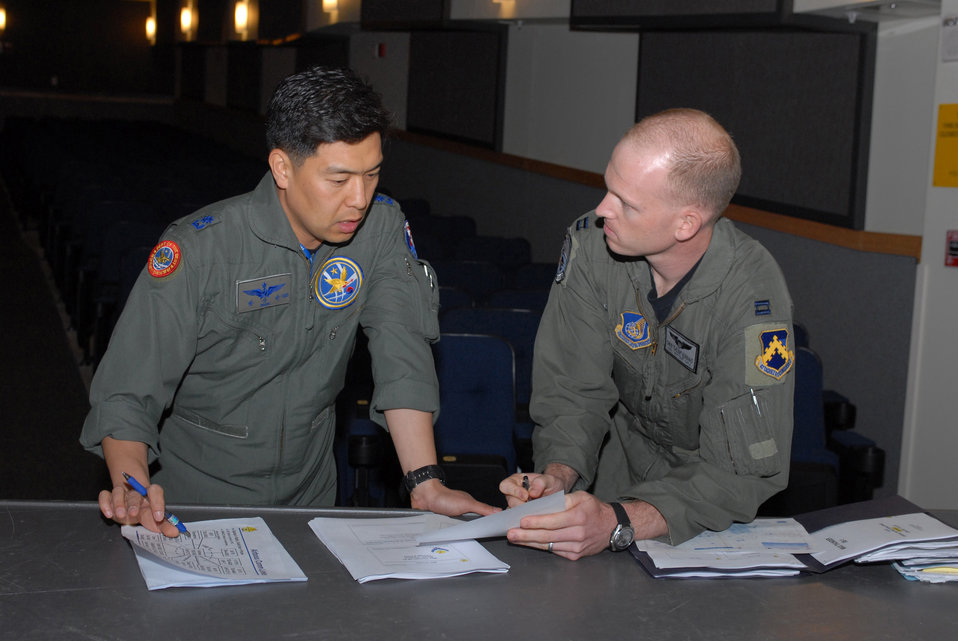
Max Thunder exercise

South Korea air force Maj. Sang-Gyoon Park discusses the Exercise Max Thunder itinerary with Capt. Chris Hubbard, here June 16 at Kunsan Air Base, South Korea. Max Thunder is a bi-lateral training exercise between U.S. and Korean Airmen used to strengthen joint operations and sharpen warfighting skills. Major Park is a pilot with the 11th Fighter Wing and Captain Hubbard is an 8th Operations Group pilot.